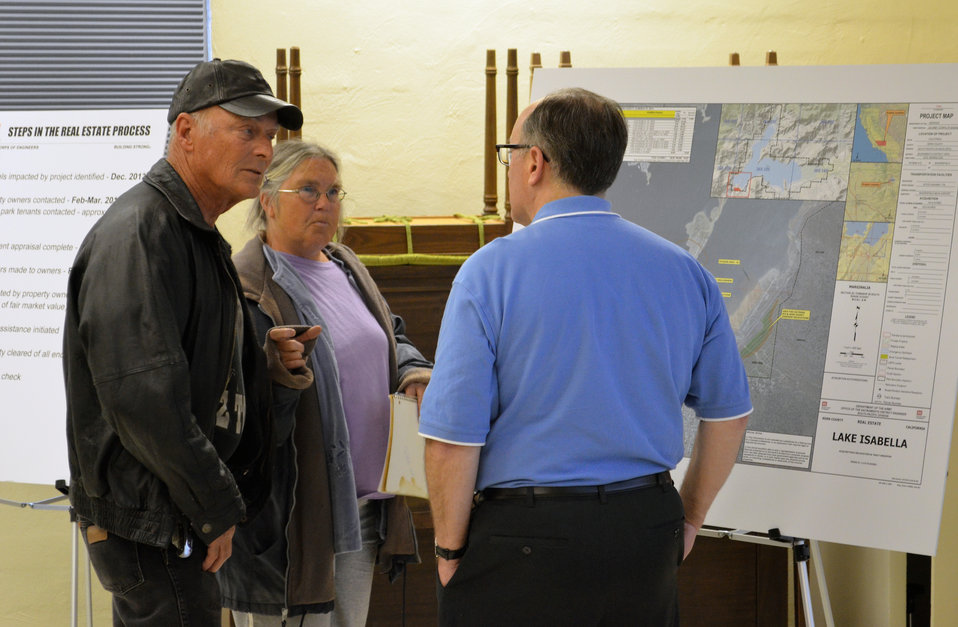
Corps meets with Lake Isabella owners

John Menniti (right), senior project manager for the U.S. Army Corps of Engineers Sacramento District Isabella Lake Dam Safety Modification Project, discusses impacted properties and proposed real estate actions with local residents at a public meeting March 27, 2014 in Lake Isabella, Calif.